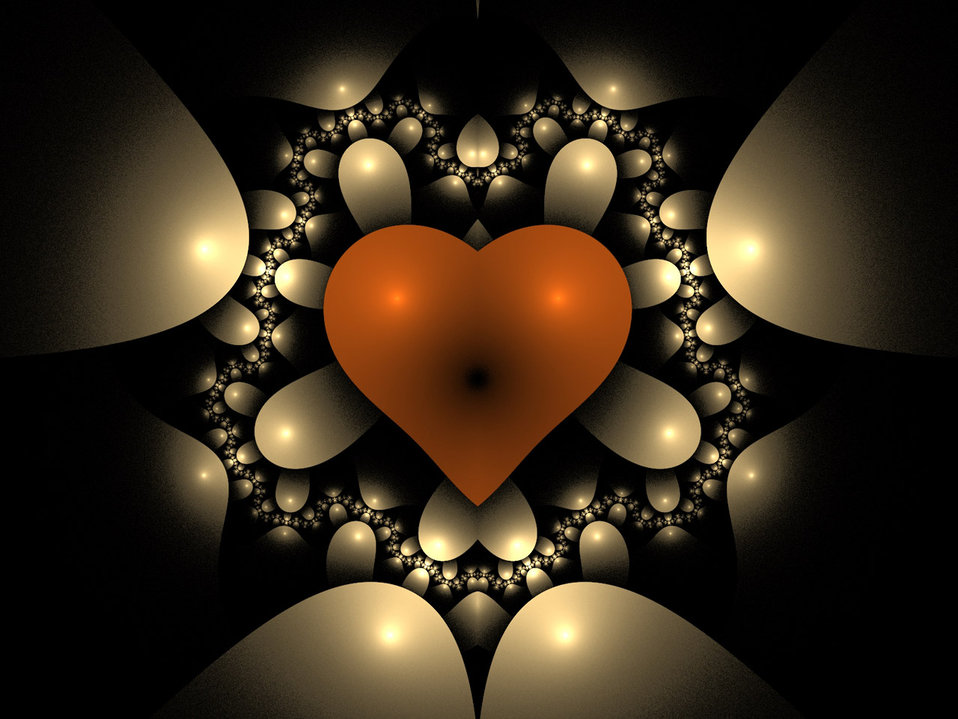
Red heart

Fractal of a red heart surrounded by beige balls.